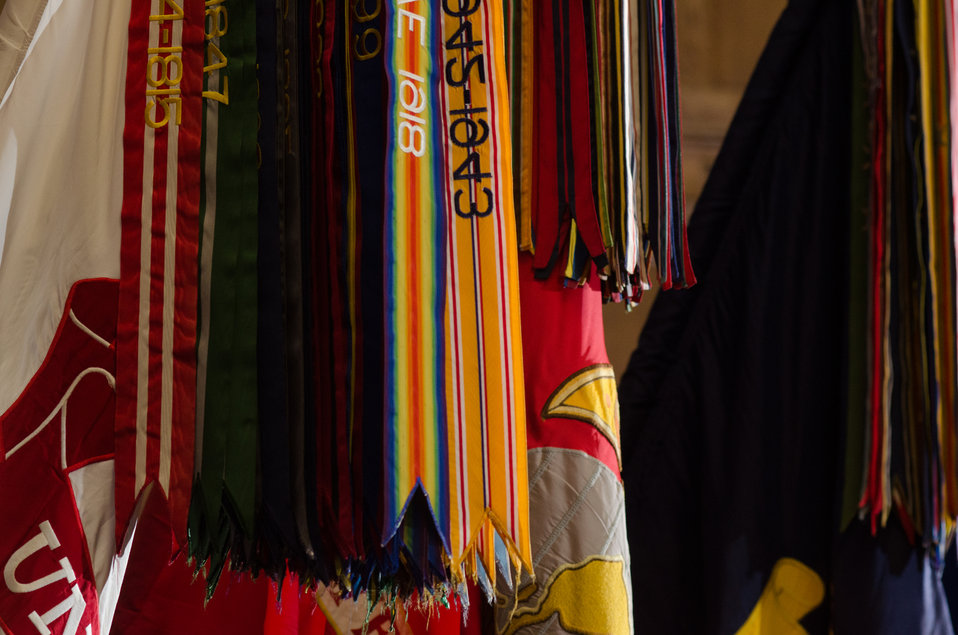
The U.S. Military District of Washington Joint Armed Forces Color Guard present the colors during the U.S. Department of Agriculture (USDA) 2013 National Hispanic Heritage Month ”Hispanics: Serving and Leading our Nation with Pride and Honor,” on Thursday, Sept. 19, 2013, in the Jefferson Auditorium, USDA Headquarters, Washington, D.C.